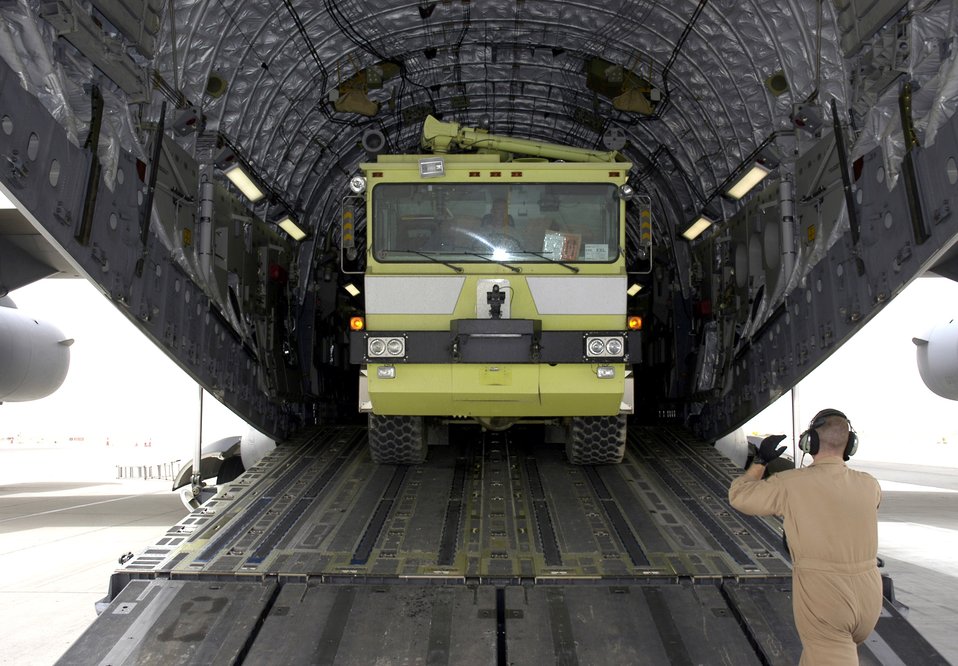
Air Force, Navy deliver firetrucks donated by Baltimore

Airmen from the 386th Expeditionary Logistics Readiness Squadron load a fire and rescue truck April 19 inside a C-17 Globemaster III in Southwest Asia. The truck is one of two donated by Baltimore officials and bound for Mazar-i-Sharif Airport in Northern Afghanistan.